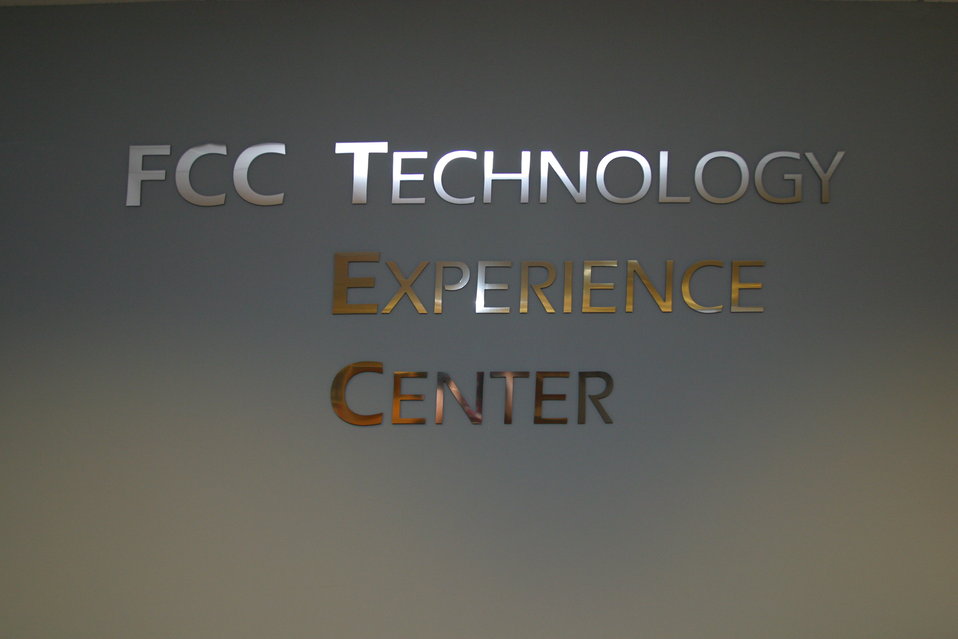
TEC Center

Debuting the FCC TEC Center on Wednesday July 13, 2011